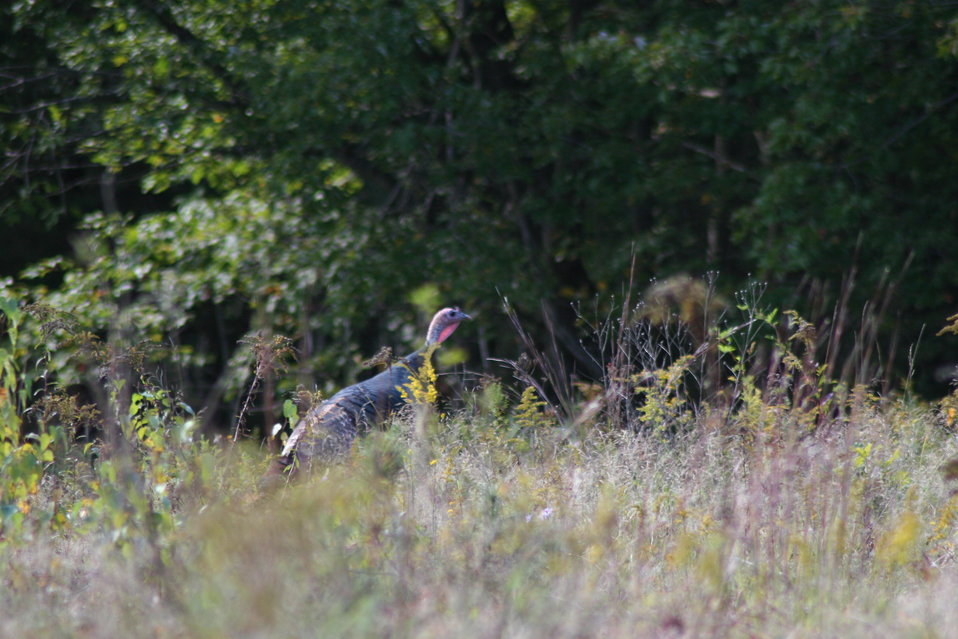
Turkey at Great Bay NWR

Wild turkey at Great Bay National Wildlife Refuge, Newington, NH.